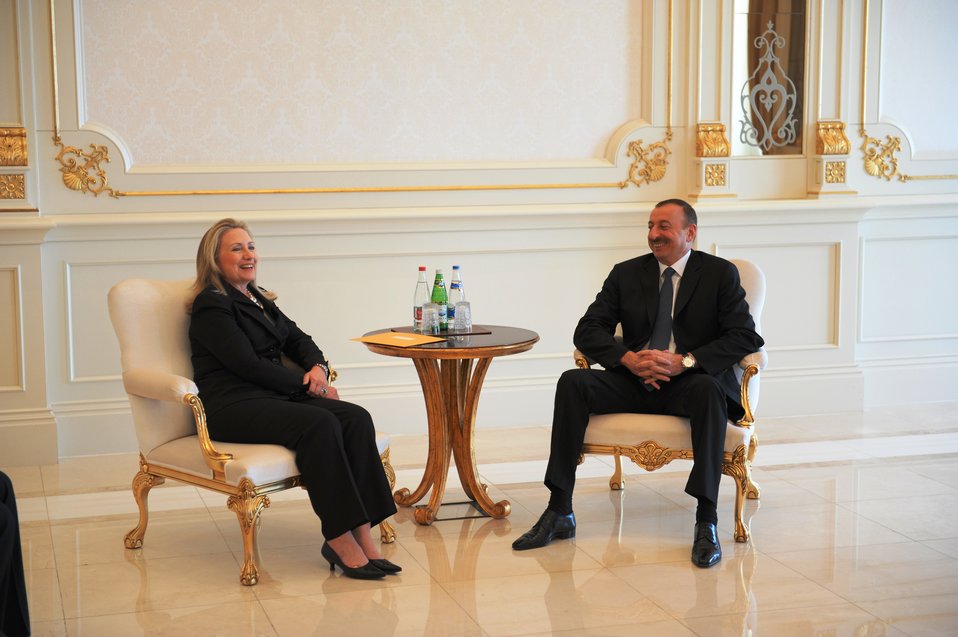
Secretary Clinton Meets With Azerbaijani President Aliyev

U.S. Secretary of State Hillary Rodham Clinton meets with Azerbaijani President Ilham Aliyev in Baku, Azerbaijan, on June 6, 2012.